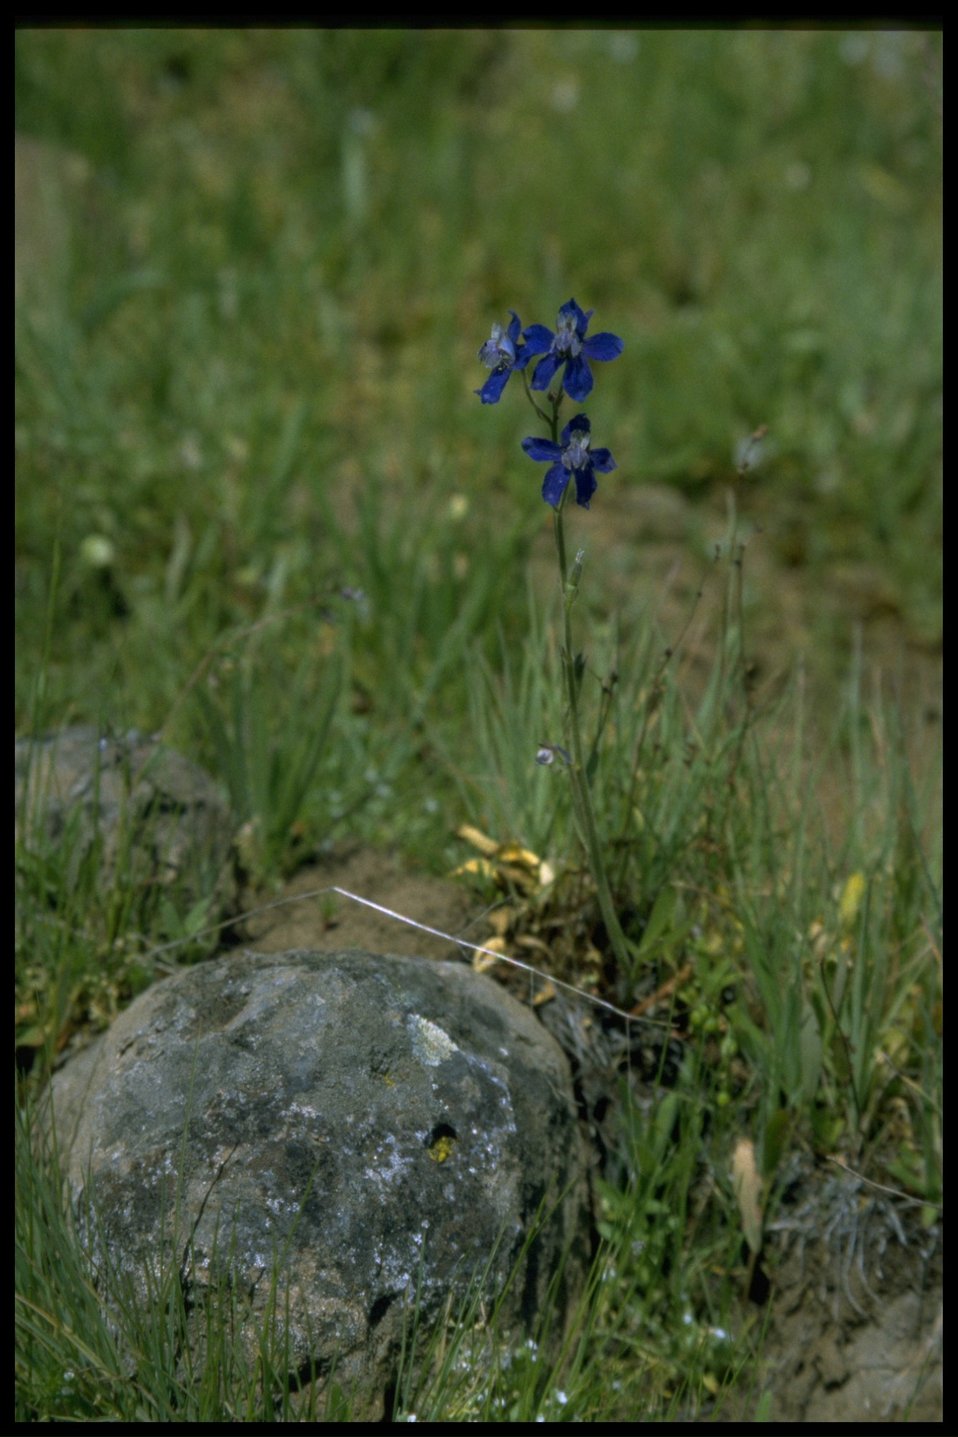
Medium shot of Larkspur wildflower.